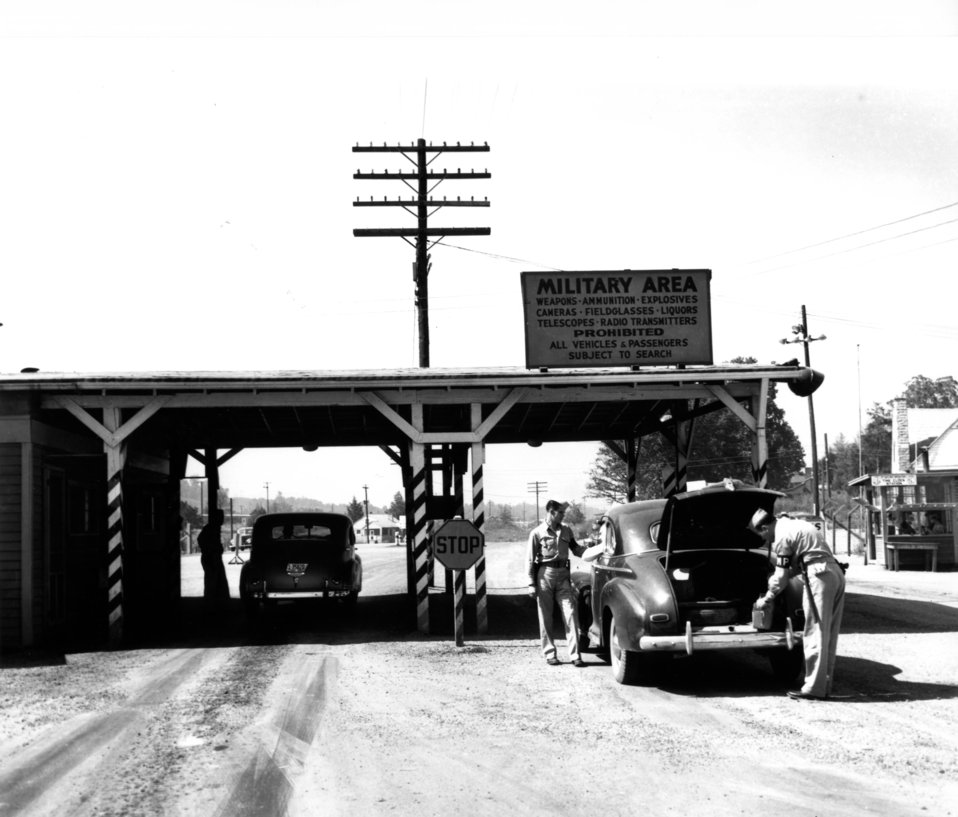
Security at Oak Ridge